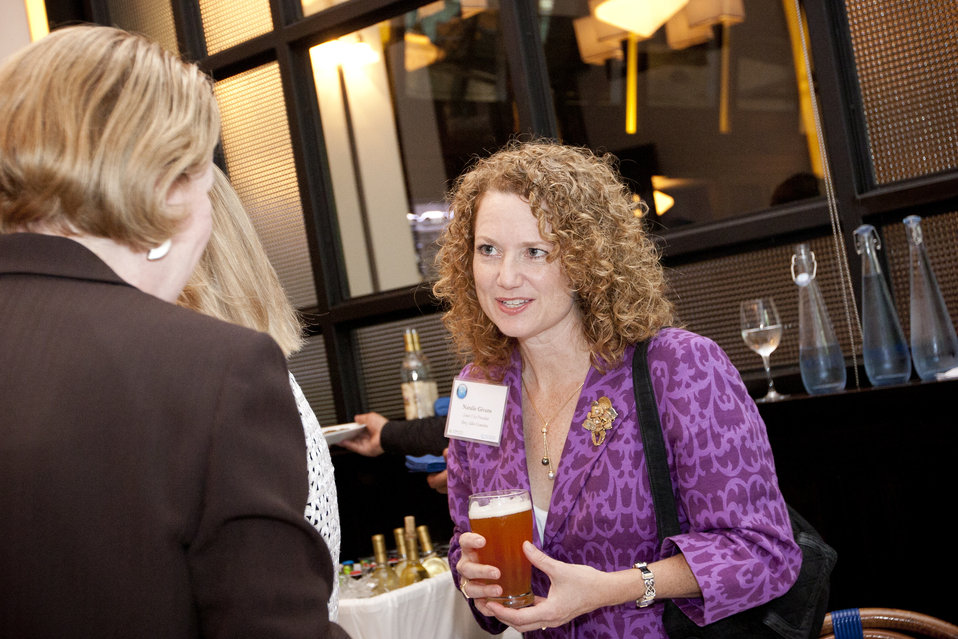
WomenandEnergy 23